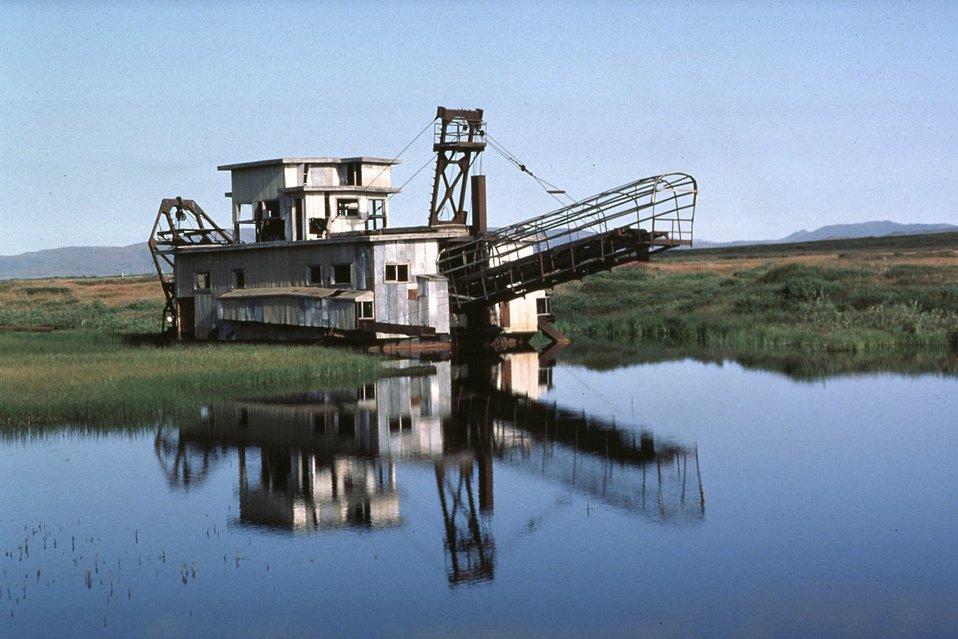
Historic gold dredge, Seward Peninsula